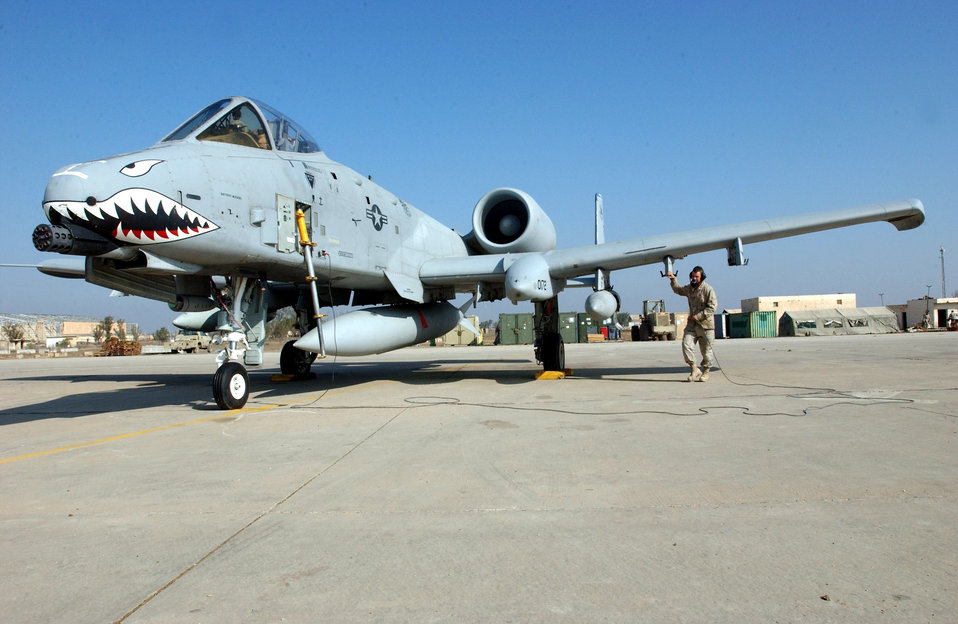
Iraqi Freedom

TALLIL AIR BASE, Iraq -- Airman 1st Class Kruskie Jacob talks with an A-10 Thunderbolt II pilot during preflight system checks here Dec. 4. Jacob is a crew chief with the 23rd Expeditionary Aircraft Maintenance Squadron.